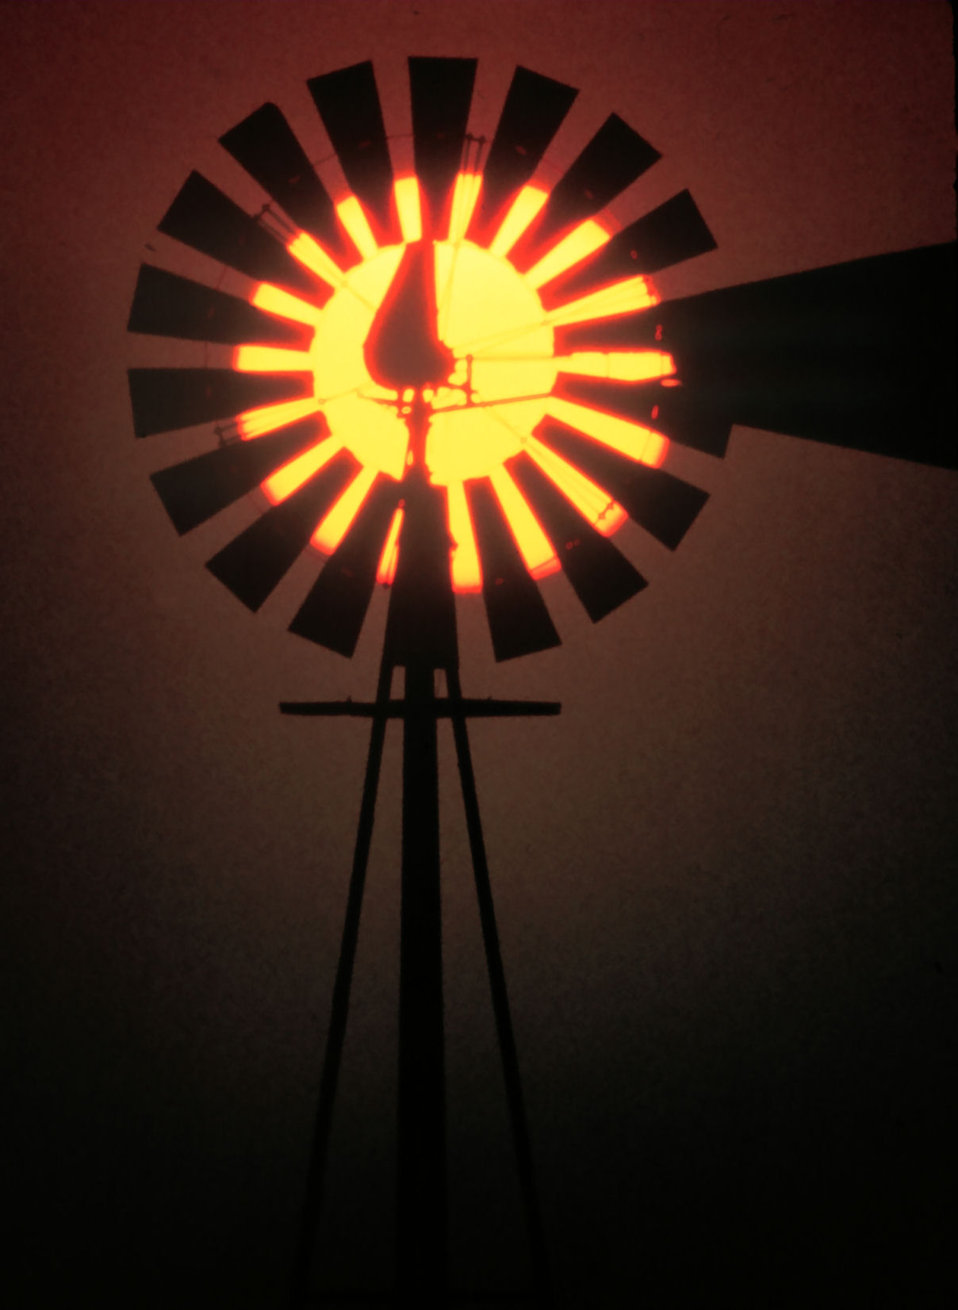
A windmill sunset